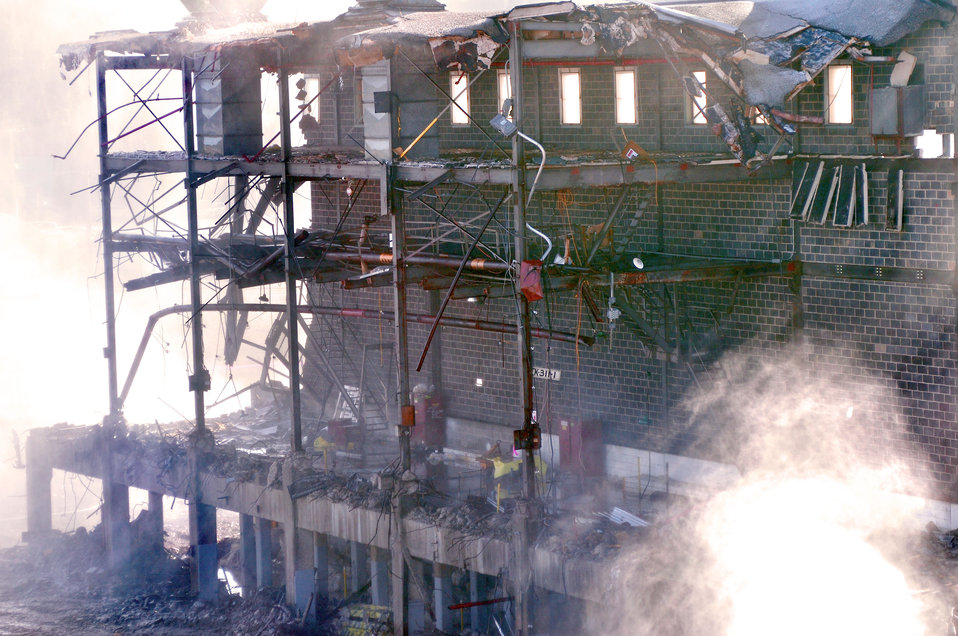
Last Part of K-25 Coming Down Oak Ridge 2013

13-157-1 DOE photo Lynn Freeny 12-19-2013 Oak Ridge Tennessee